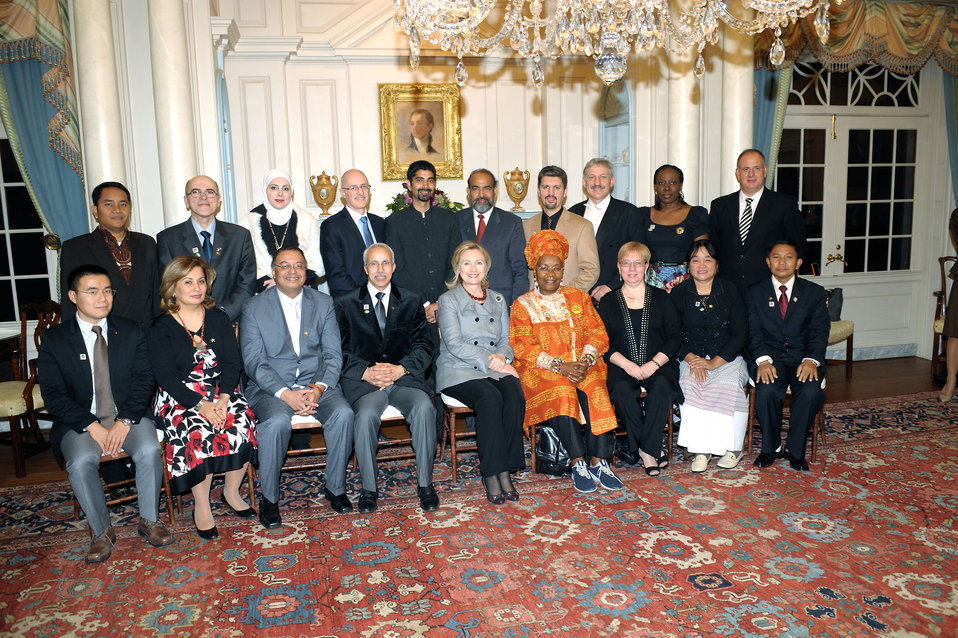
Secretary Clinton Poses for a Photo With Members of the International Visitor Leadership Program

U.S. Secretary of State Hillary Rodham Clinton poses for a photo with International Visitor Leadership Program participants celebrating the National Council for International Visitors’ 50th Anniversary and the International Visitor Leadership Program’s 70th Anniversary in the Franklin Room at the U.S. Department of State in Washington, D.C., on February 17, 2011.